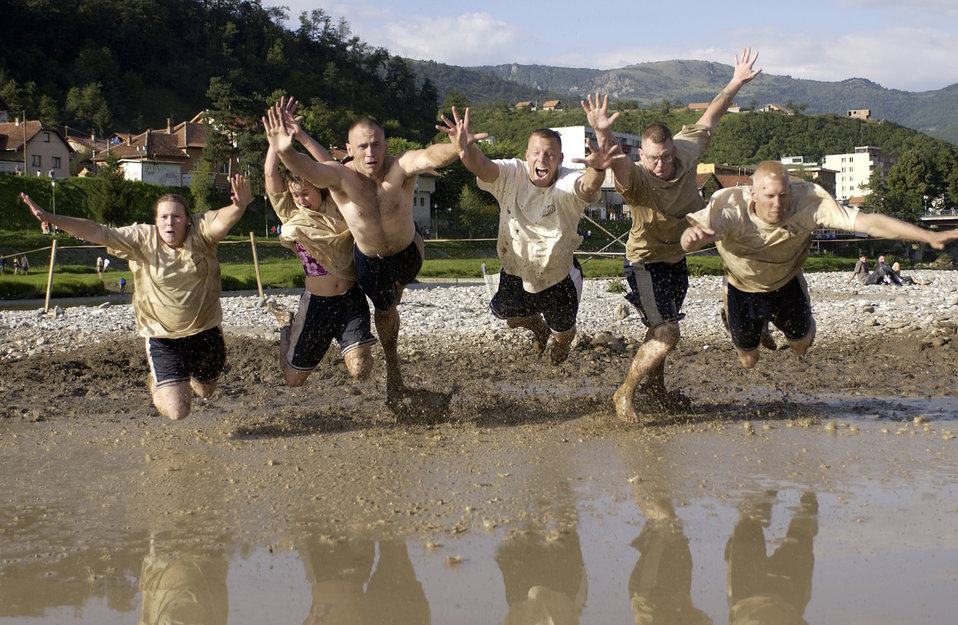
Playing in the mud

GORAZDE, Bosnia and Herzegovina -- The U.S. Stabilization Force sports team jumps in the soccer mud-pit in preparation for a sports day competition here Aug. 15. The city of Gorazde annually televises the sports day which has four international teams, including a representative team from SFOR military members. The teams compete in hybrid games such as slippery volleyball, potato sack and inner tube races and mud soccer.